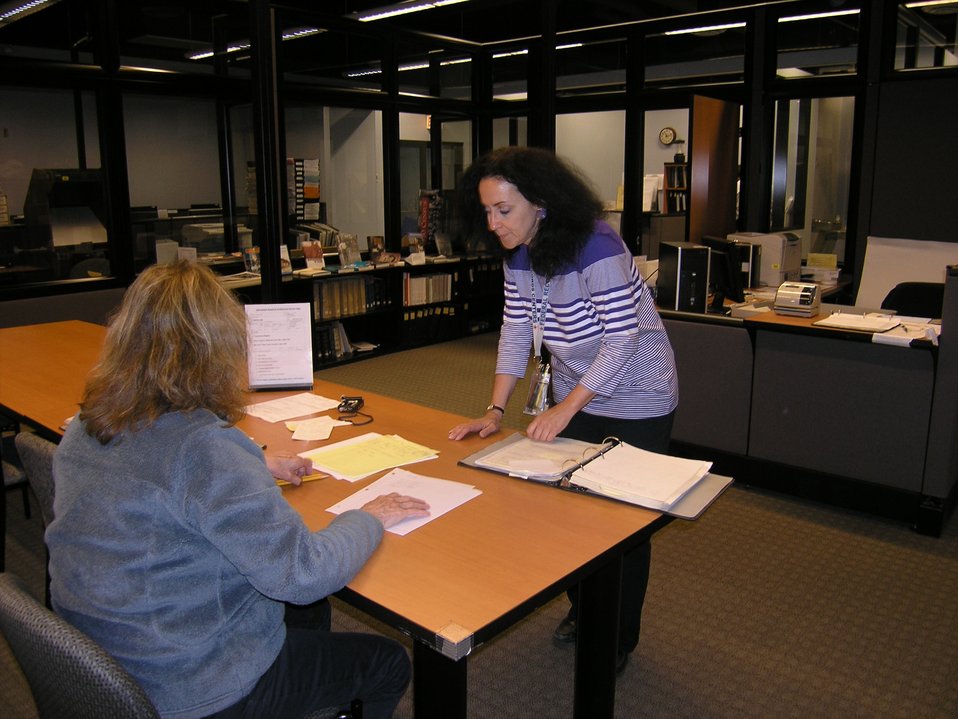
Katie Dishman, Archivist, explains records to a researcher; Location: National Archives at Chicago, Chicago, IL